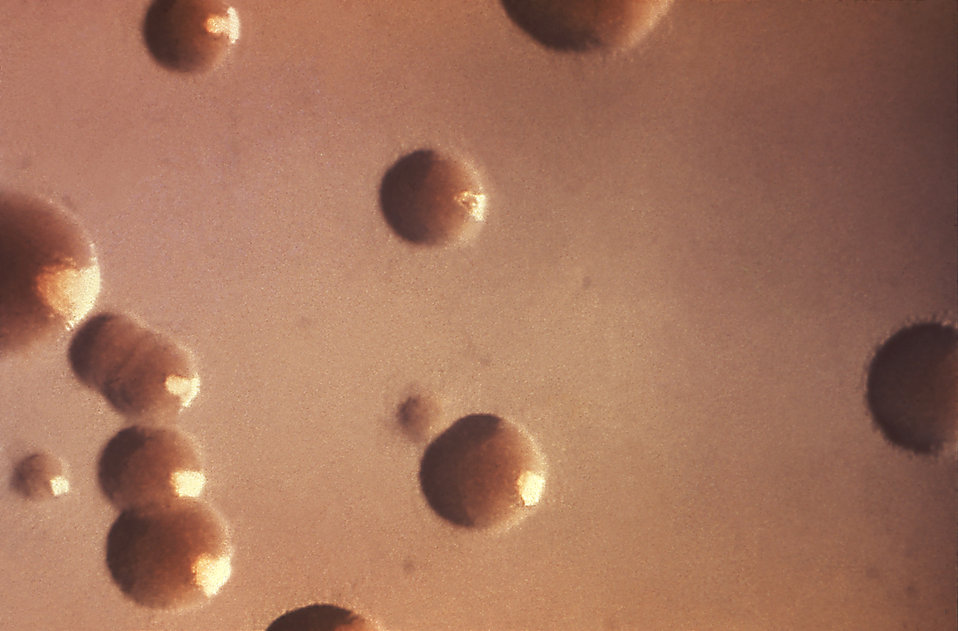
This is a heart infusion agar culture growing colonies of Yersinia pestis bacteria.